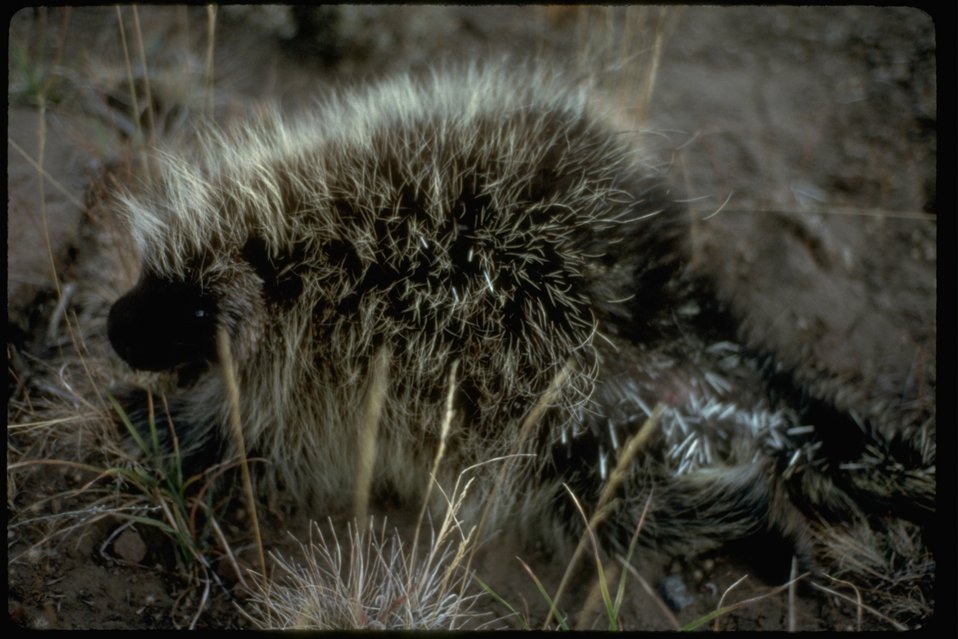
Porcupine in the Blitzen River Wilderness Study Area. OR 2-86